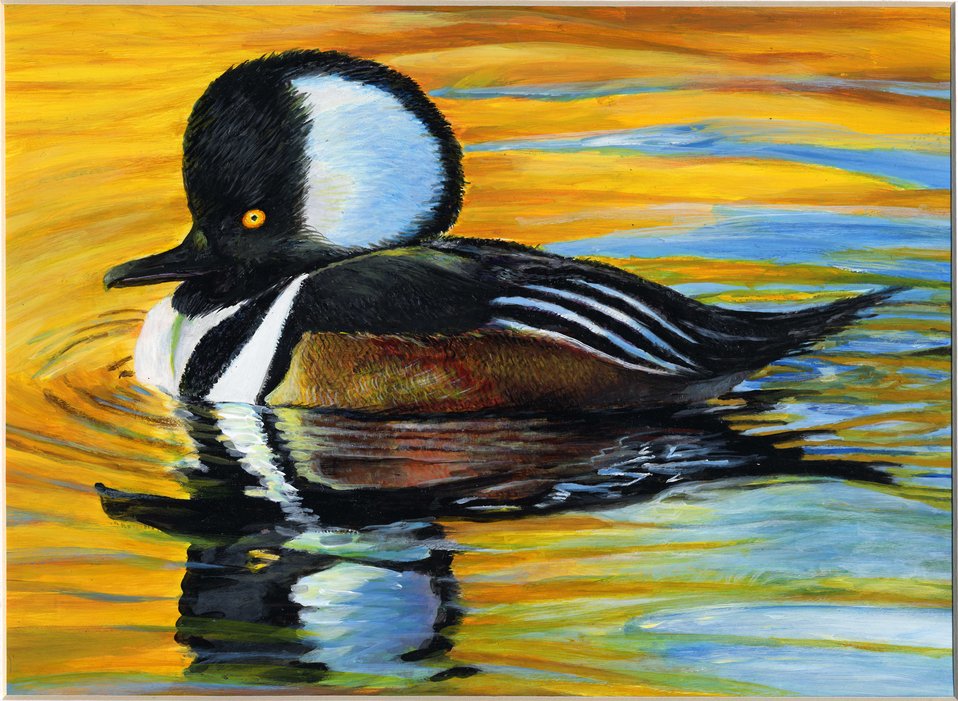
Maryland

2012 Jr Duck Stamp Program
State Best of Show
Maryland